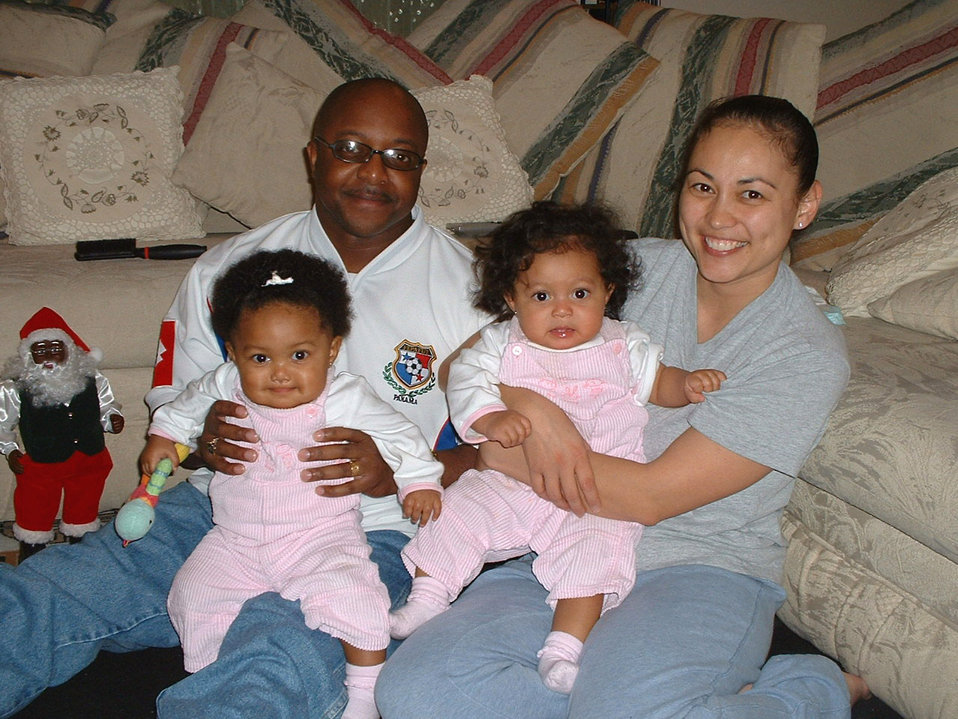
Serving through the season: Tech. Sgts. Fernando and Flor Richards

Tech. Sgts. Flor and Fernando Richards pose for a photo opportunity with their 10-month-old twin daughters, Damaris Isabel and Analiza Gabriela.